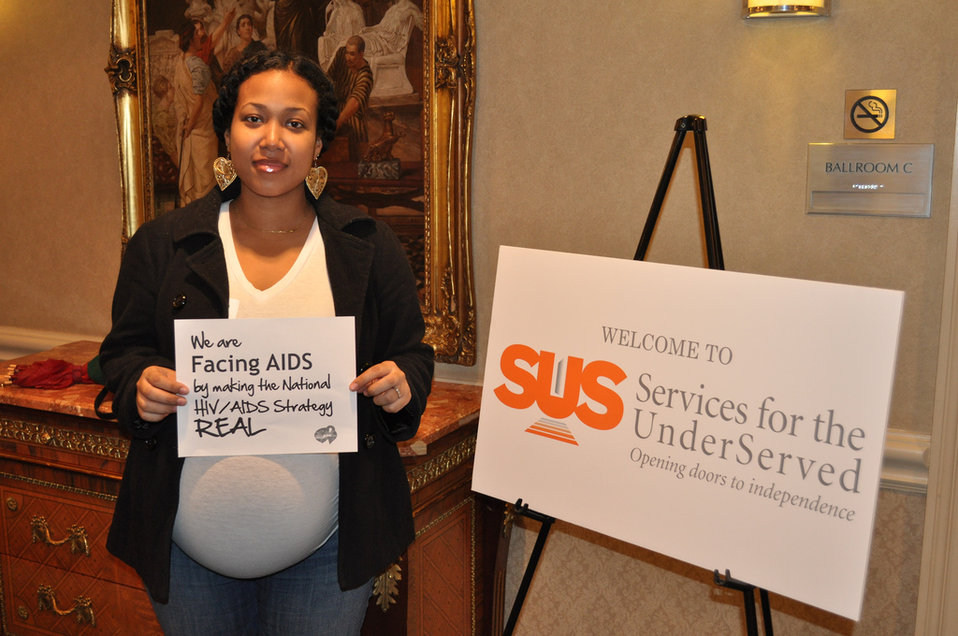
We are Facing AIDS through NHAS-04